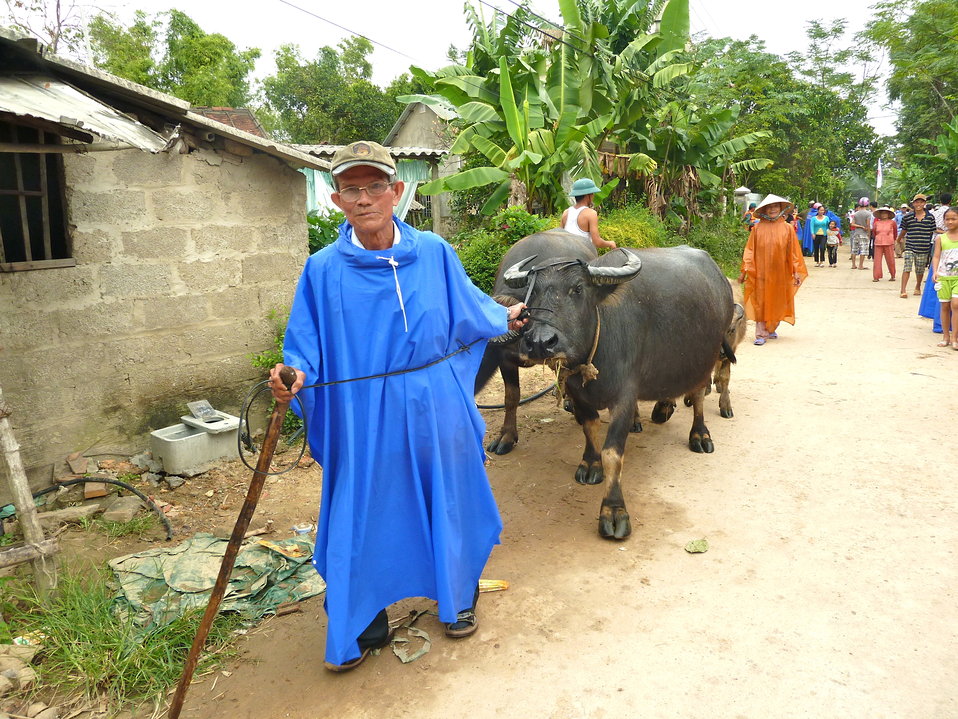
USAID and Save the Children support community evacuation drill and emergency preparedness in central Vietnam

Loc An Commune, Phu Loc District, Thua Thien Hue Province
December 4, 2012, Photo: Richard Nyberg, @USAIDVietnam